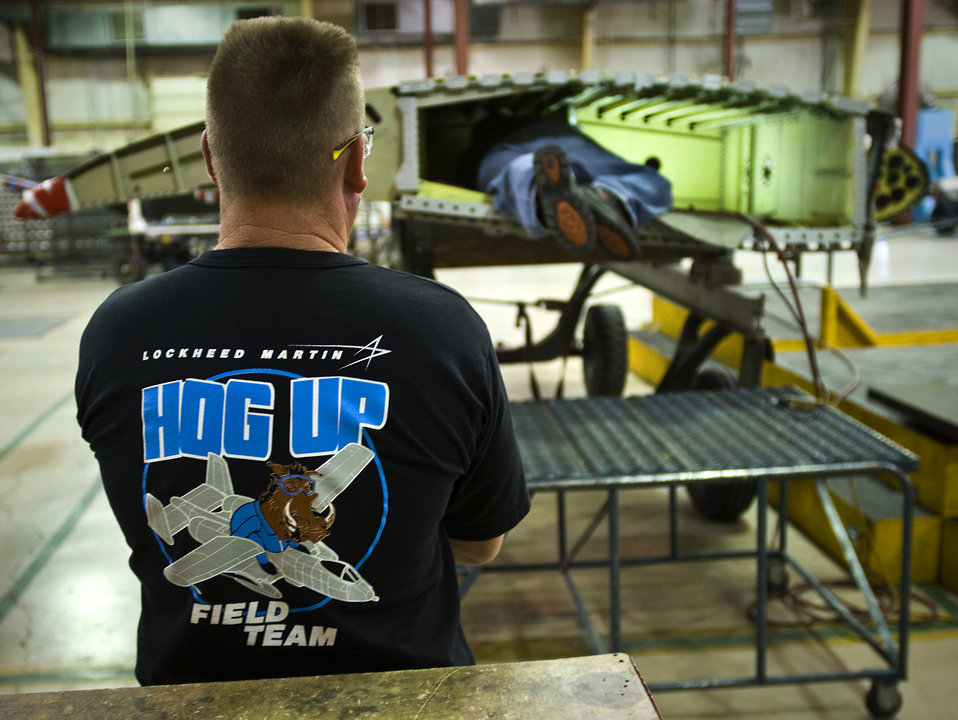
A-10 Hog Up

Rory Bisby observes David Montano as he works inside an A-10 Thunderbolt II outer wing Dec. 17, 2009. A-10s are undergoing a wing upgrade at the 309th Aerospace Maintenance and Regeneration Group at Davis-Monthan Air Force Base, Ariz. The upgrade process, affectionately called the